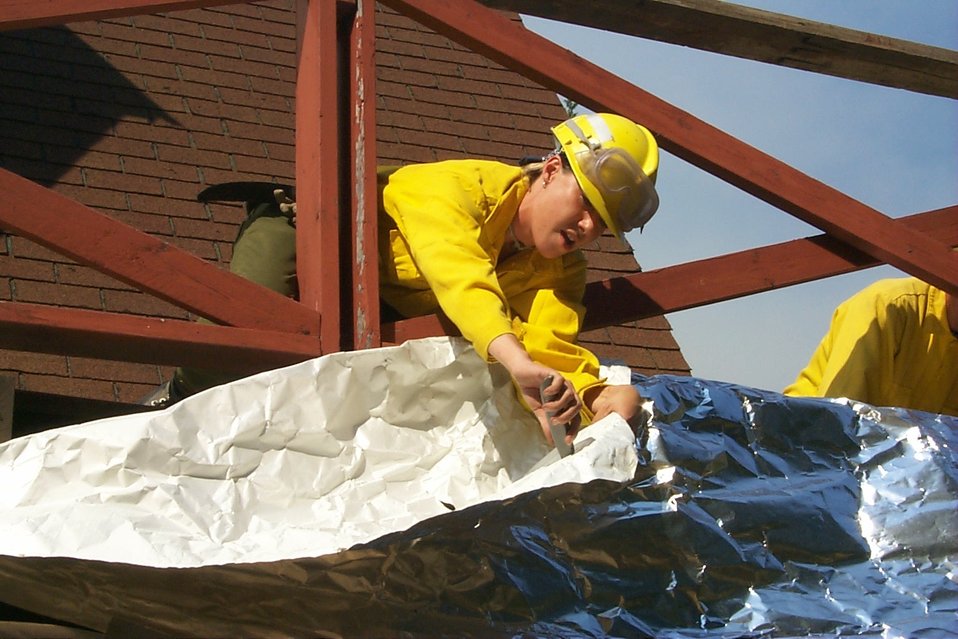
Fire retardant measures Fire Clearwater Fire Salmon Field Office USRD Upper Snake River District